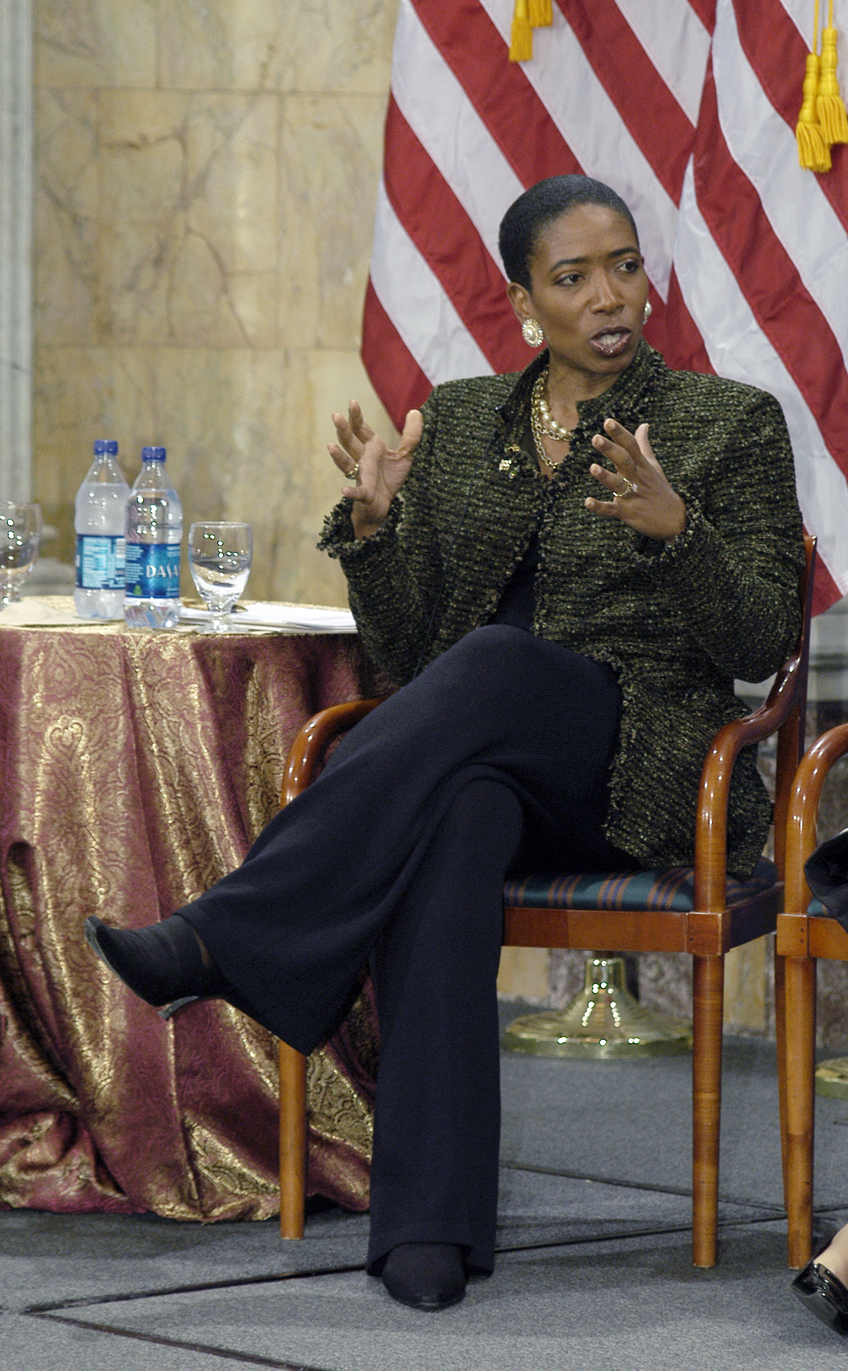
Women in Finance Symposium, 03/29/2010

Director of the Strategic Client Group of Morgan Stanley Carla Harris gives words of advice to women entering the world of Finance at the Women in Finance Symposium hosted at Treasury on March 29, 2010.